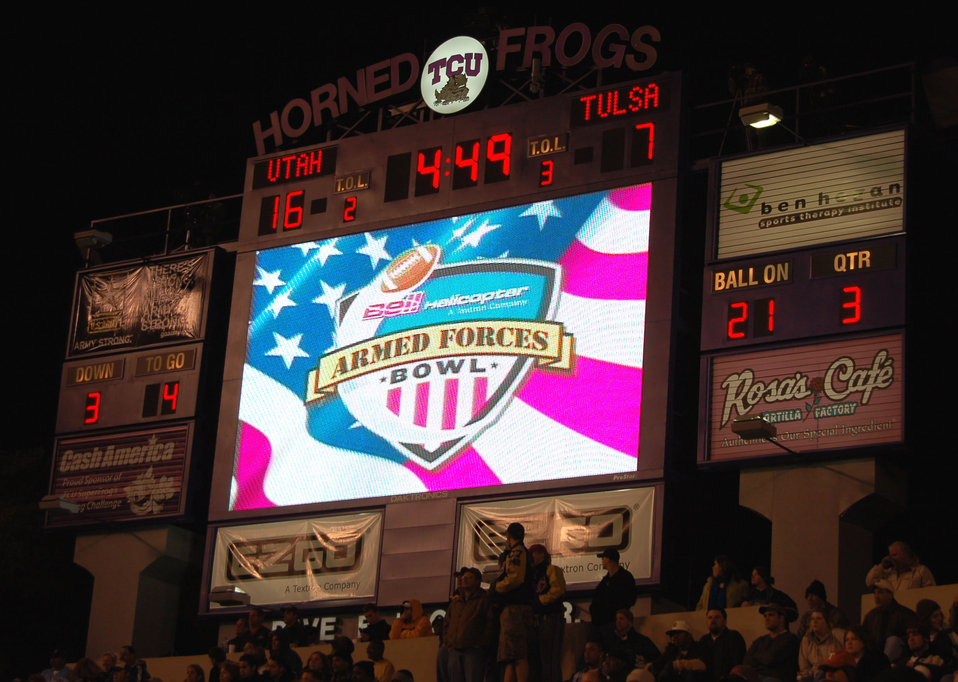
Bell Helicopter Armed Forces Bowl pays tribute to servicemembers

The logo for the Bell Helicopter Armed Forces Bowl is shown on the scoreboard at Amon G. Carter Stadium in Fort Worth, Texas, Dec. 23. The Bell Helicopter Armed Forces Bowl is an event in partnership with America Supports You, a Department of Defense program that showcases American support for members of the armed forces. The University of Utah Utes defeated the Golden Hurricanes of the University of Tulsa, 25-13.